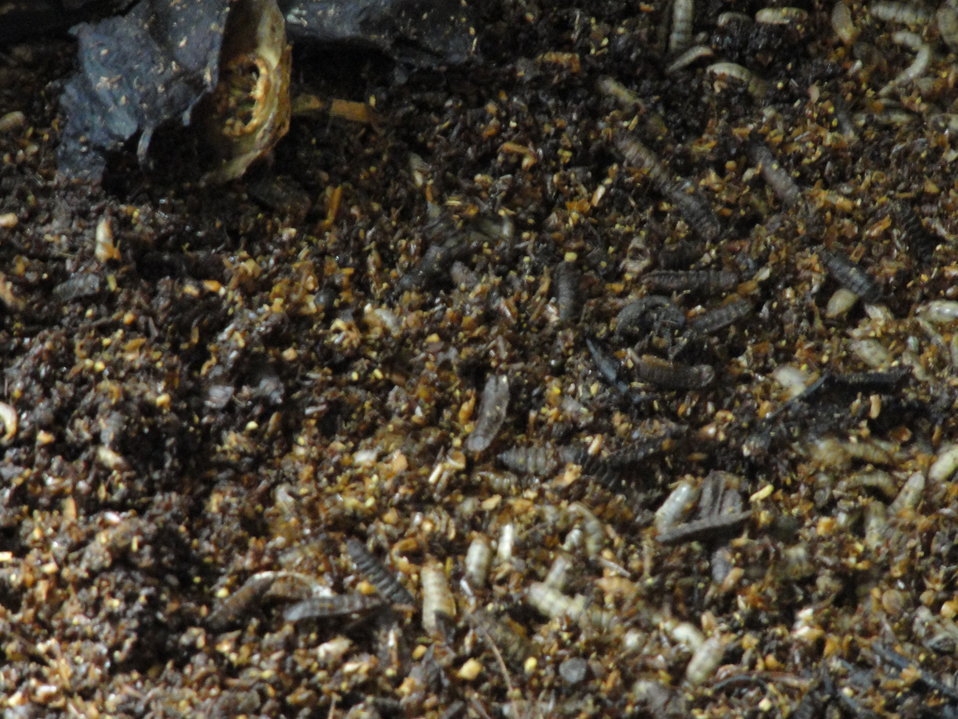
Visiting Saratoga National Fish Hatchery

In April of 2014, regional office employees visited Saratoga National Fish Hatchery to learn more about its efforts towards recovering the Wyoming toad (Bufo baxteri).

The hatchery adopted a unique role in becoming the first unit in the National Fish Hatchery System to become involved in rearing endangered amphibians. The Wyoming toad was a common sight on areas of the Laramie Plains, Albany County, Wyoming, into the early 1970s but the species' populations crashed in the mid-1970s. The Wyoming toad was listed as endangered by the U.S. Fish & Wildlife Service in January 1984. Found only in southwestern Wyoming, the Wyoming toad is considered the most endangered amphibian in North America. The hatchery maintains a captive population for breeding, rearing, and refugia, and the offspring from this program will be used for reintroduction efforts.